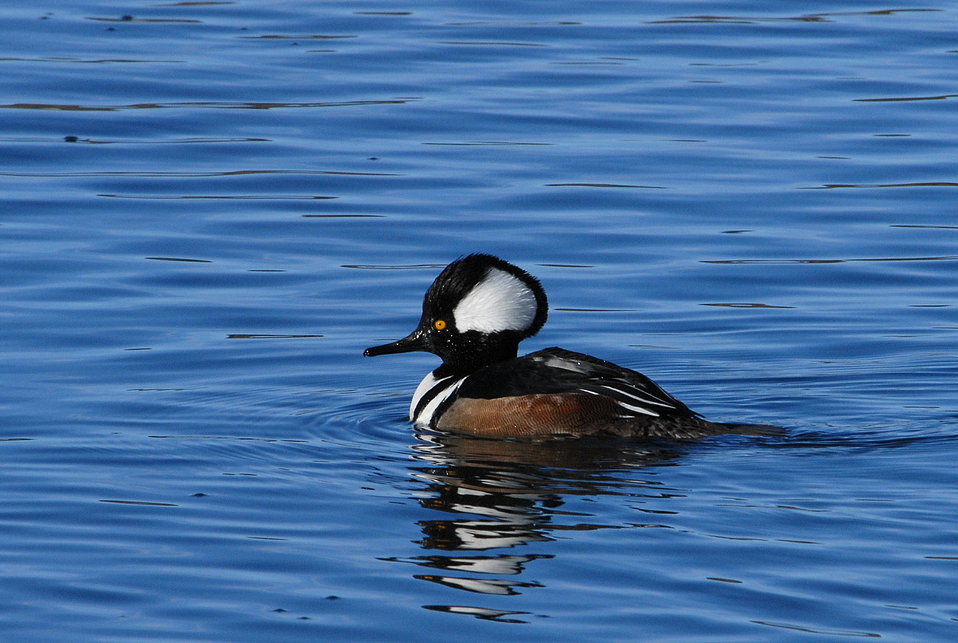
Hooded Merganser (male)